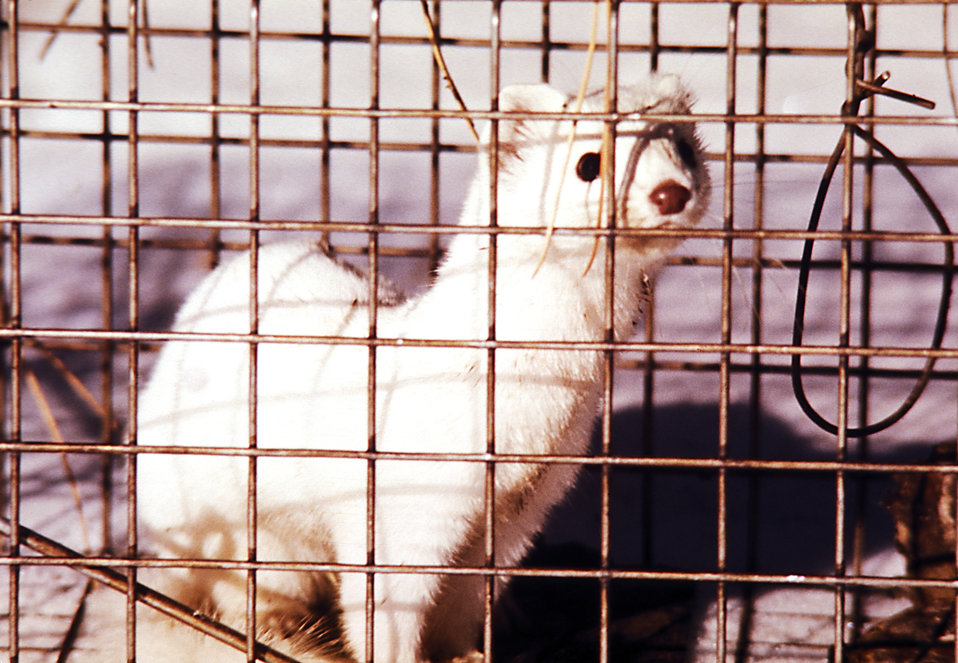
The Long-tailed Weasel, Mustela frenata, here seen in its winter pelage, is a carrier of plague vectors.